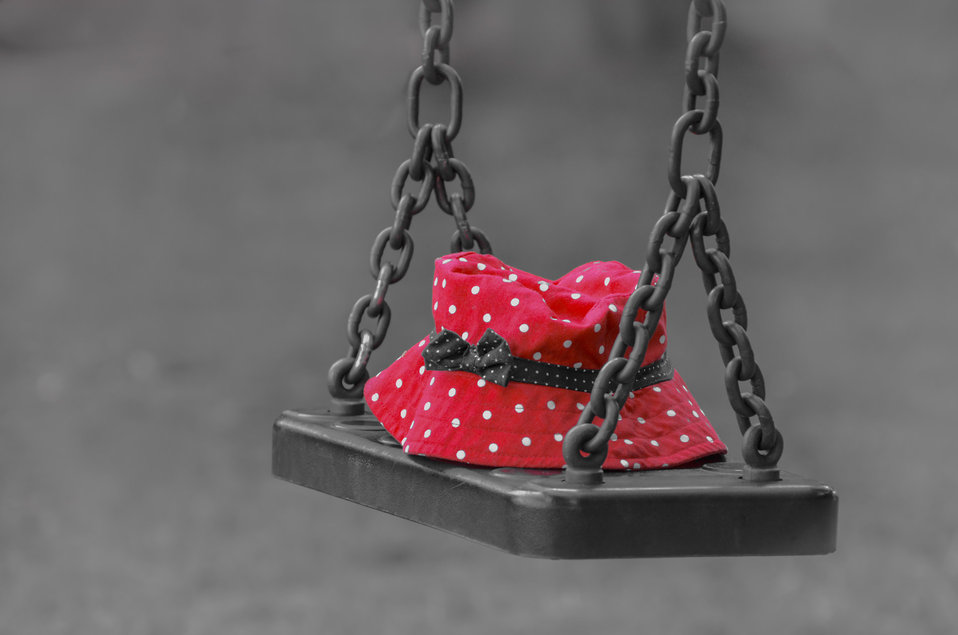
Forgotten hat.